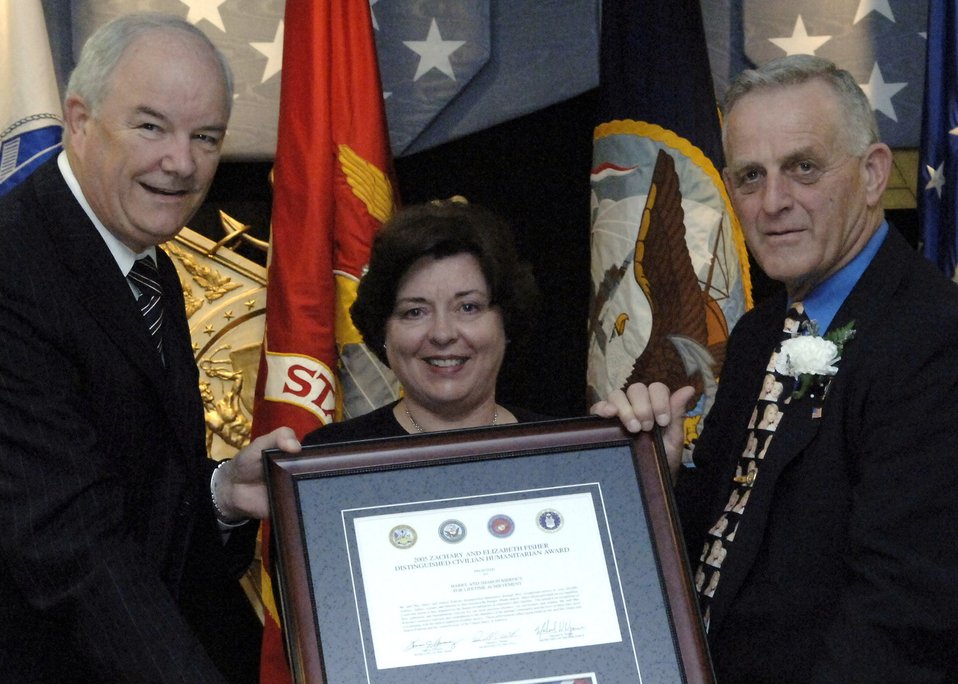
Couple honored with Fisher award

Secretary of the Air Force Michael W. Wynne presents Sharon and Harry Rideout with the 2006 Zachary and Elizabeth Fisher Distinguished Civilian Humanitarian Award Oct. 26 at the Pentagon. Among their many accomplishments to support servicemembers, the Rideouts created the Bangor Greeters Group at Bangor International Airport, Maine. The all-volunteer group greets Soldiers, Sailors, Airmen and Marines as they pass through the airport, either going to or returning from overseas deployments.